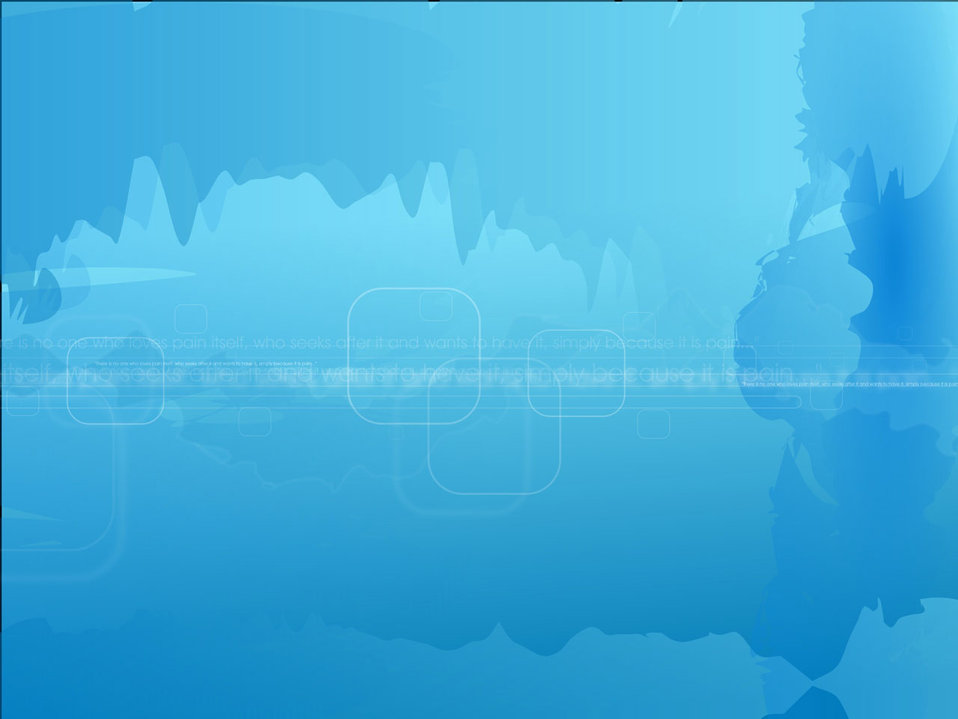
Abstract blue

Experimental abstract.